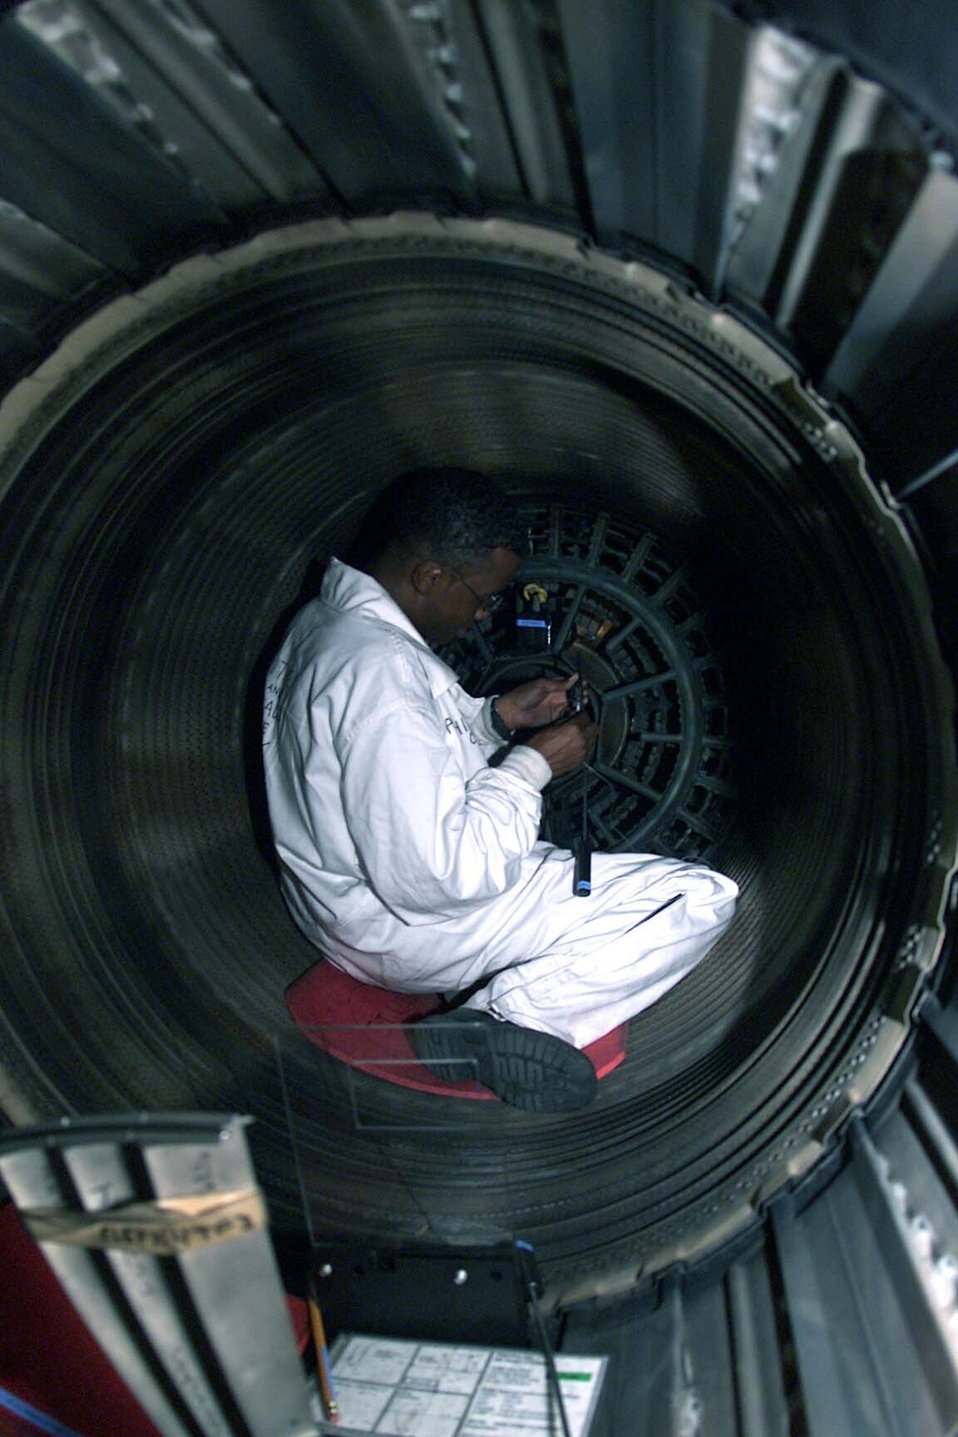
Inspecting engines

GWANGJU AIR BASE, South Korea -- Staff Sgt. Orlando Williams conducts a load pressure turbine inspection on an F-15E Strike Eagle engine here Sept. 8. Sergeant Williams is deployed from Elmendorf Air Force Base, Alaska, assigned to the 3rd Air Expeditionary Group.